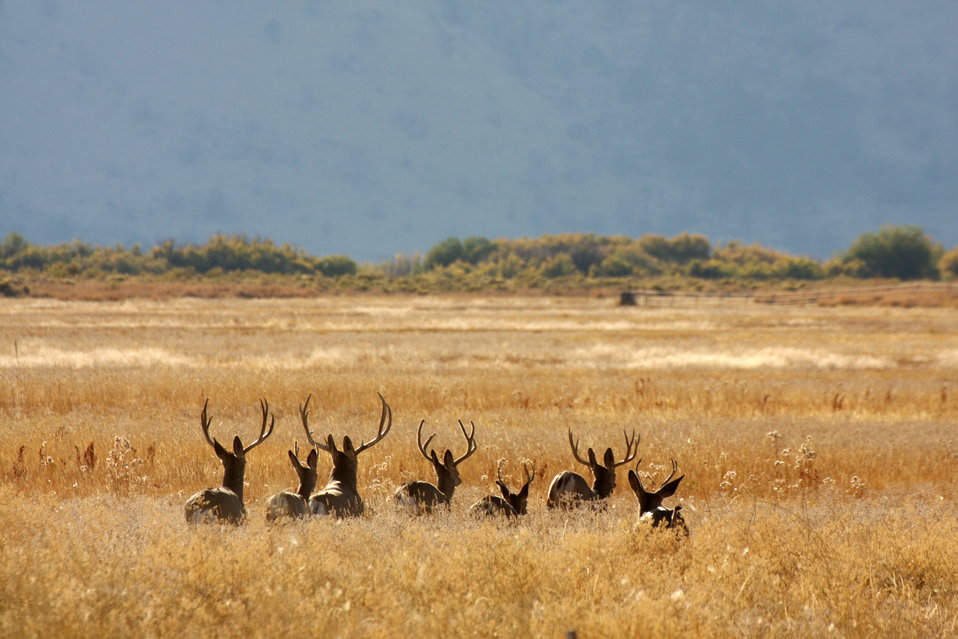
malheur refuge, Mule deer buck group

A group of mule deer bucks moves across Malheur National Wildlife Refuge in Oregon. There is no big game hunting on the refuge, so deer abound.